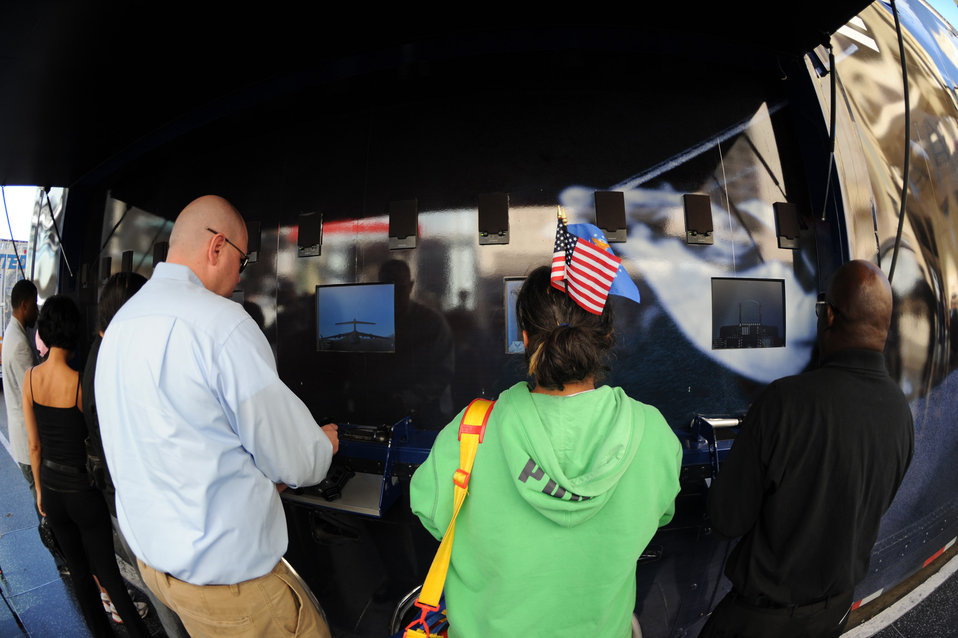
Air Force Expo in Hollywood

Los Angeles residents and tourists play a flight video game off the U.S. Air Force's 80-foot-long tour van called, “Do Something Amazing,” during the Air Force Expo at Hollywood and Highland Boulevard in Los Angeles on Nov. 14. Air Force Week Los Angeles runs until Nov. 21 and has events throughout the area.